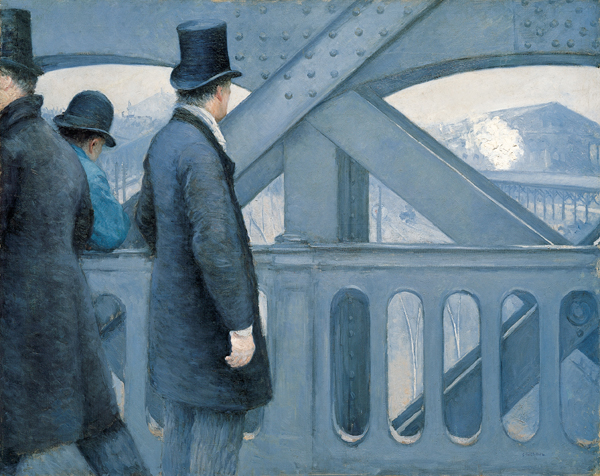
'On the Pont de l’Europe', oil on canvas painting by Gustave Caillebotte, 1876-77, Kimbell Art Museum